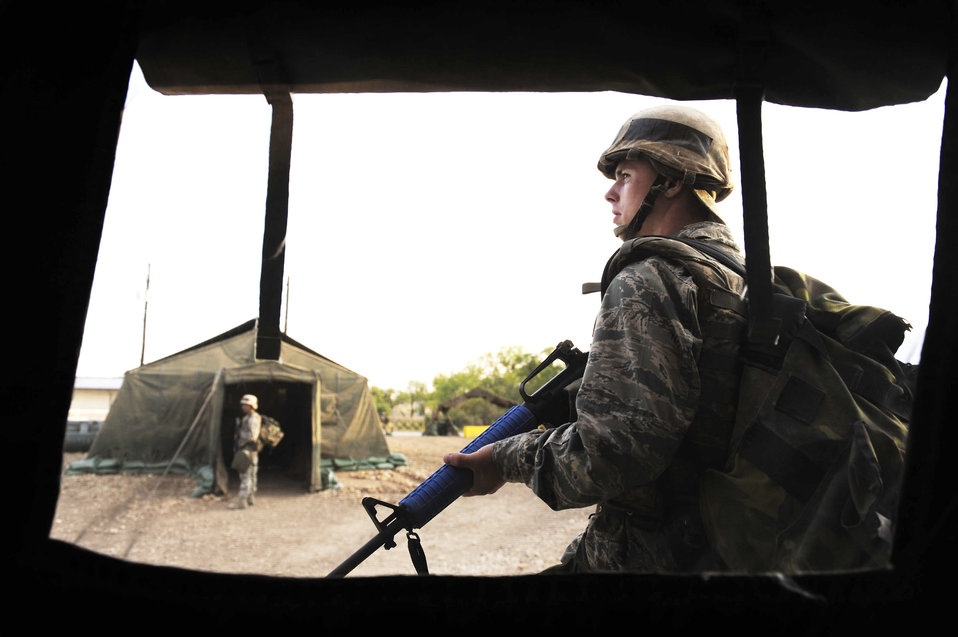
Trainees conquer the BEAST

A basic trainee posts guard at a tent keeping watch for